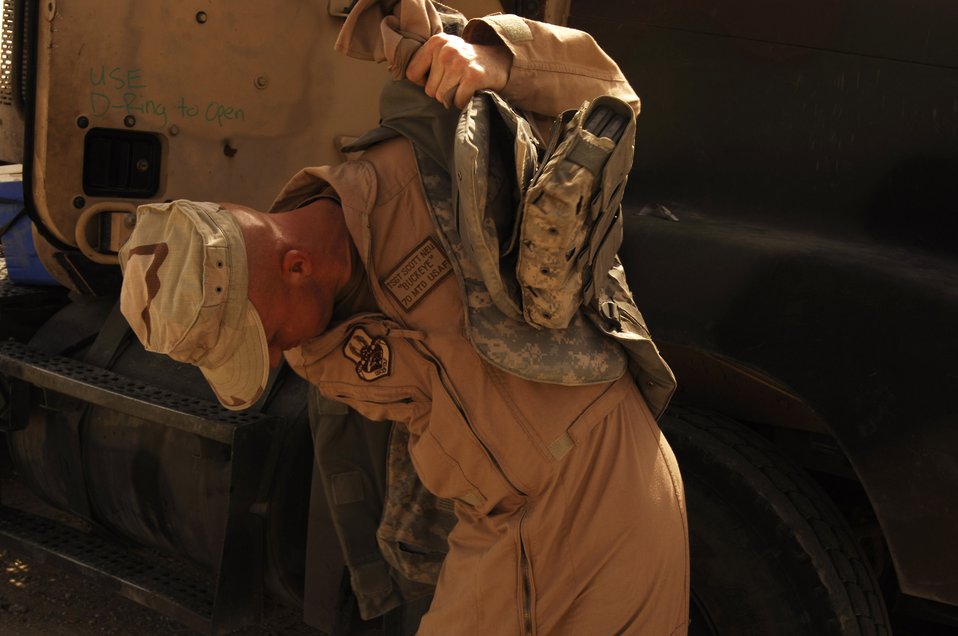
Combat truckers haul cargo through dangerous roads

Tech. Sgt. Scott Neu gears up before leading a recent convoy from an Army camp in Southwest Asia. The Airmen of the 70th and 424th Medium Truck detachments assigned to the 586th Expeditionary Logistics Readiness Squadron are in-lieu-of forces supporting the Army support line-haul convoy movements in and out of Iraq. Sergeant Neu is a convoy commander from the 586th ELRS, 70th MTD deployed from Eglin Air Force Base, Fla.